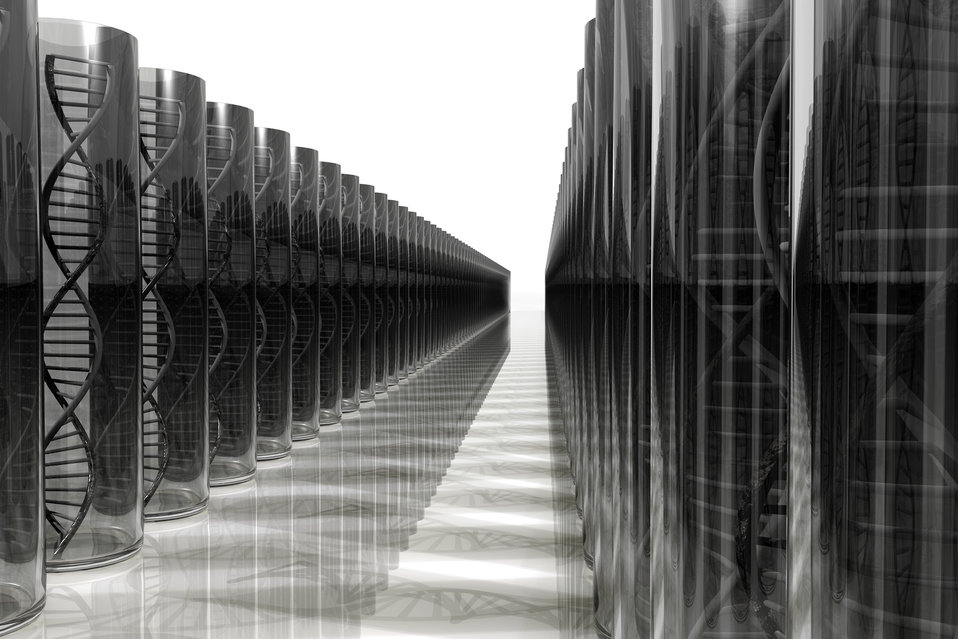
Dna

Scientific analysis.